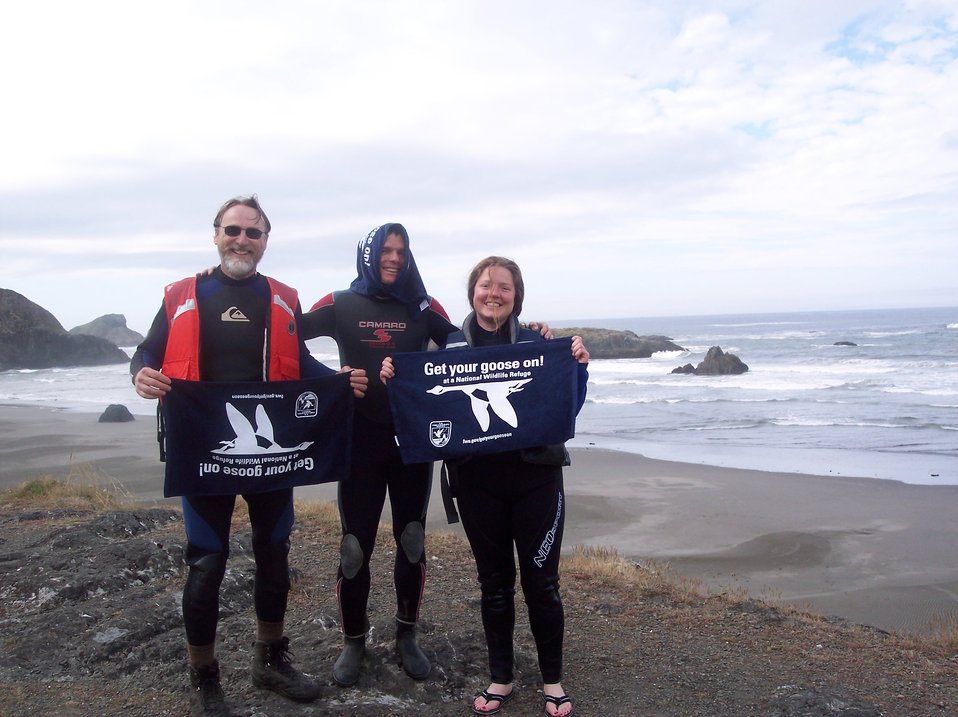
Get Your Goose On!

USFWS Refuge Manager Dave Ledig joins Refuge Biologist Bill Bridgland and Biotech Intern Heather Leftin as they Get Their Goose On! during a kayak seabird survey on Hunters Insland, a part of Oregon Islands National Wildlife Refuge.